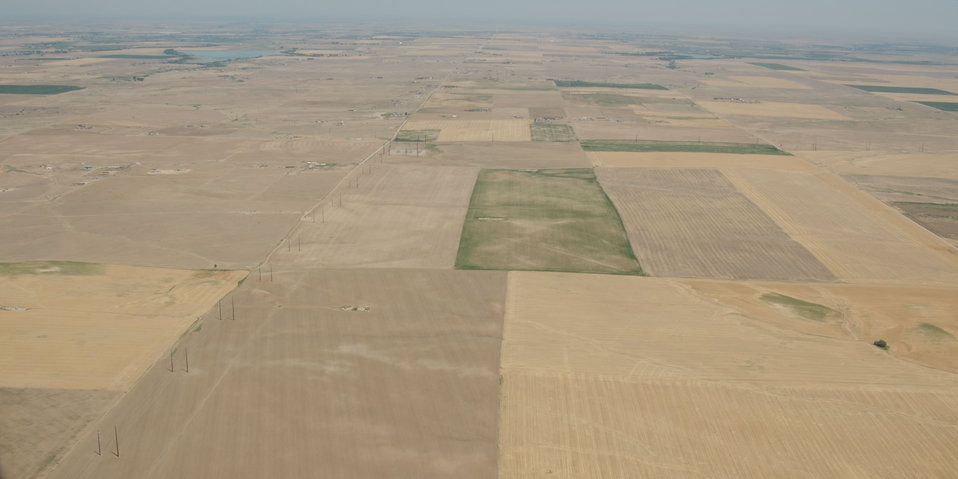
Aerial views of drought affected Colorado farm lands, 71 miles east of Denver, Colorado on Saturday, July 21, 2012.